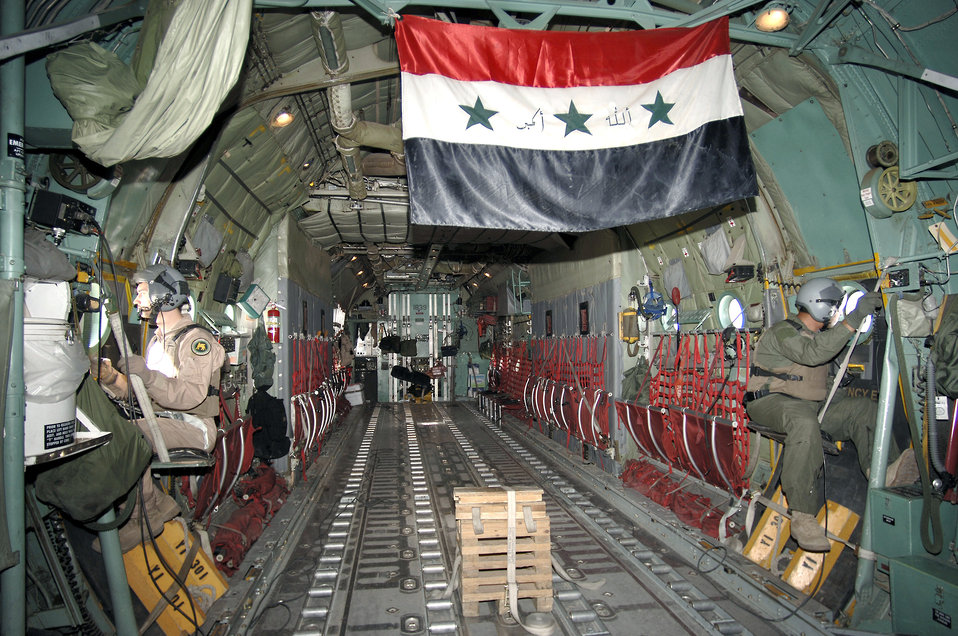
Iraqi Air Force spreads its wings

An Iraqi crewmember and Staff Sgt. Dominic Pecoraro (left) watch carefully for enemy weapons fire from their C-130E Hercules. If necessary the loadmasters have flares they can fire away from the aircraft to distract various weapons. The Iraqi loadmaster is assigned to the 23rd Squadron, New Al Muthana Air Base on Baghdad International Airport, Iraq. Sergeant Pecoraro is from the 517th Airlift Squadron at Elmendorf Air Force Base, Alaska.